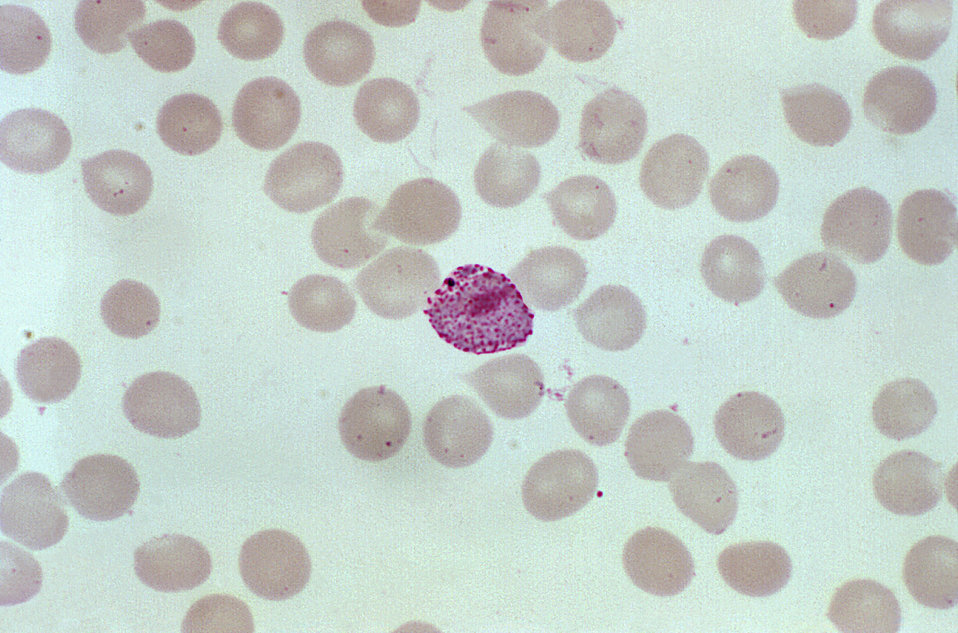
This photomicrograph of a blood smear contains a microgametocyte of the parasite Plasmodium vivax.